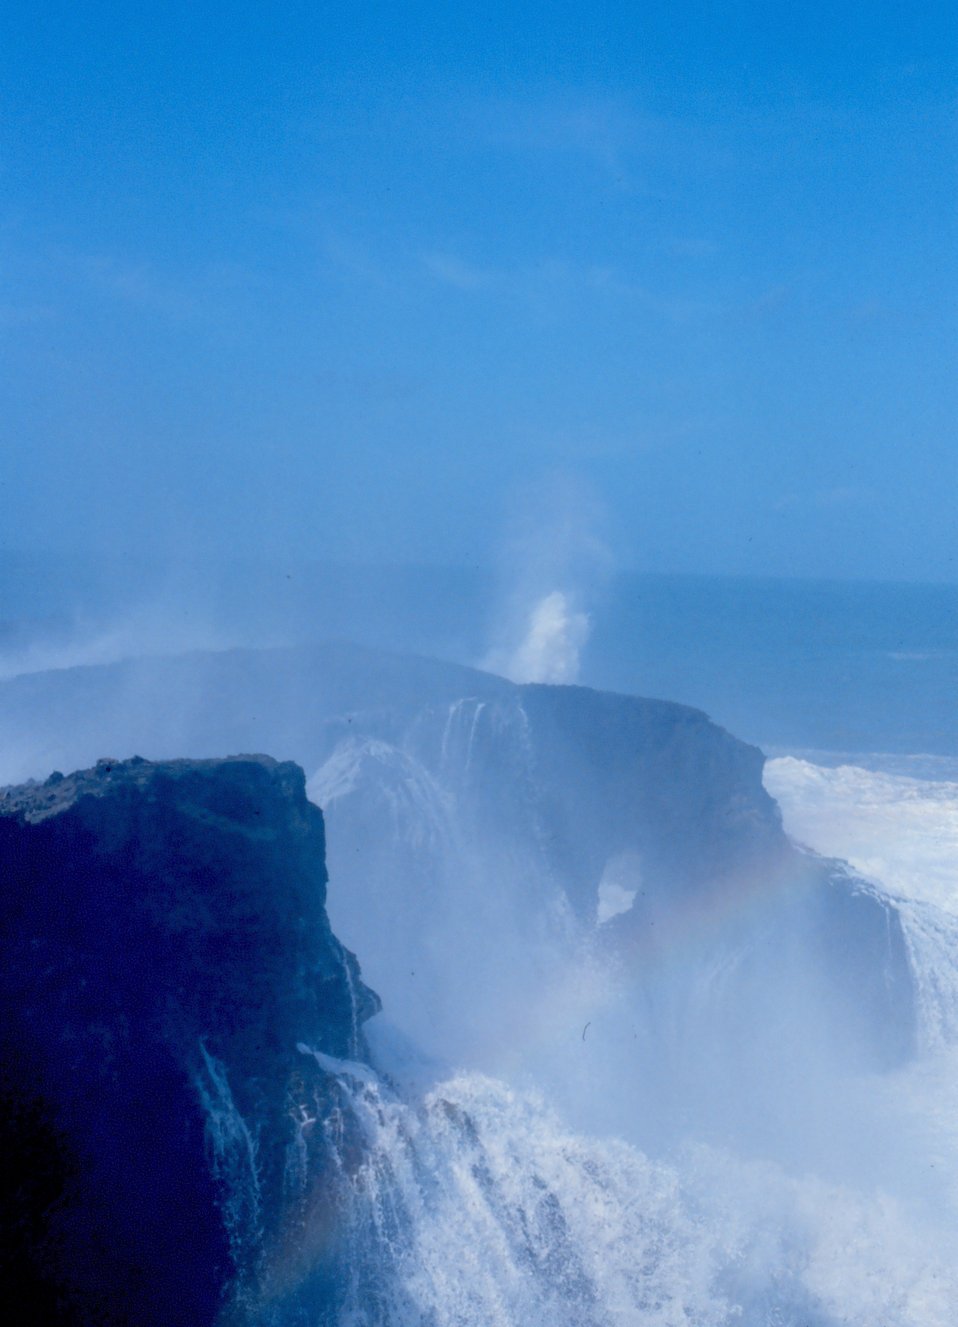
Hurricane surf on the north coast of Puerto Rico.